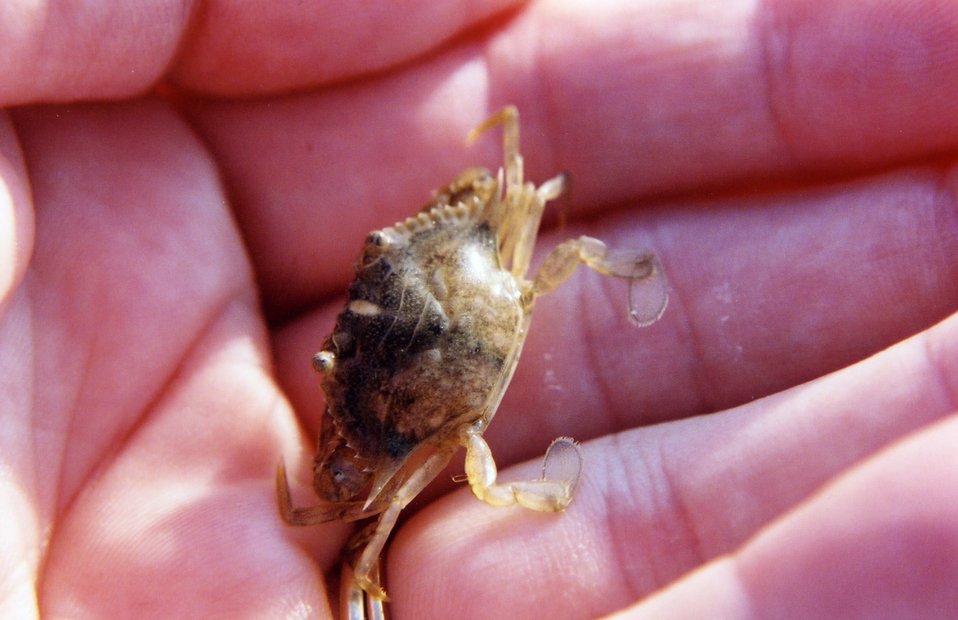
Juvenile blue crab.